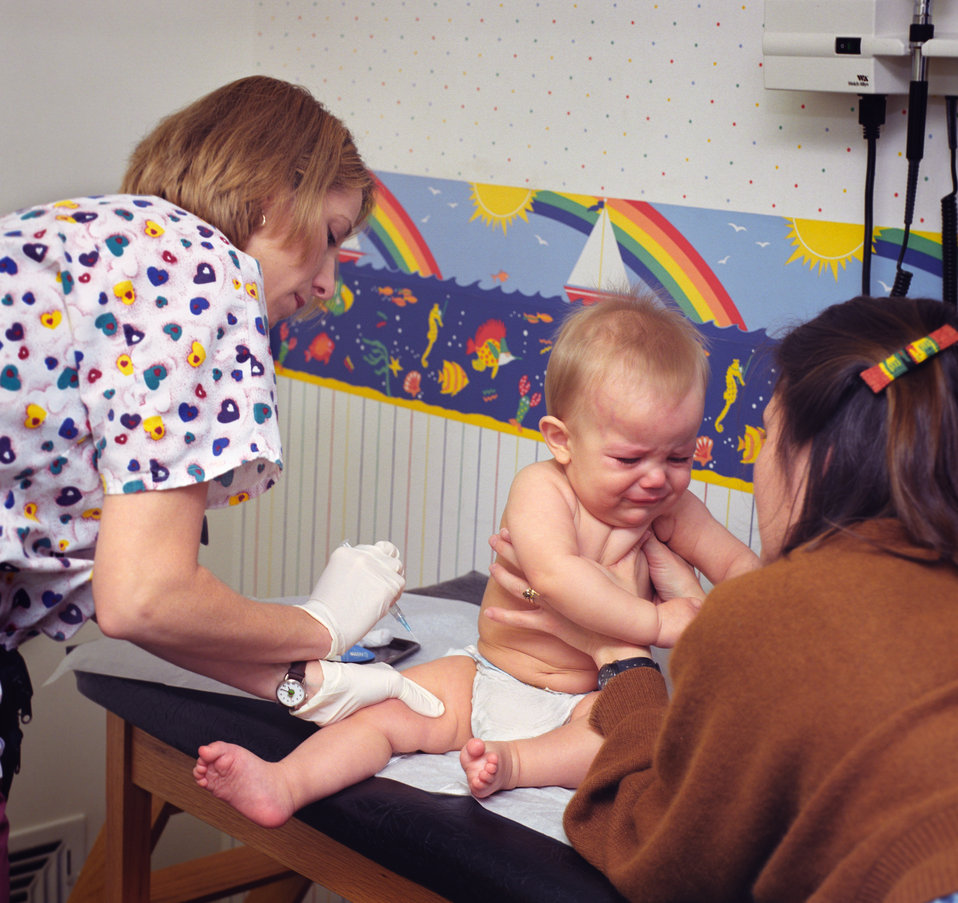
This photograph depicts a physician's assistant administering a Hepatitis B vaccination to an infant.